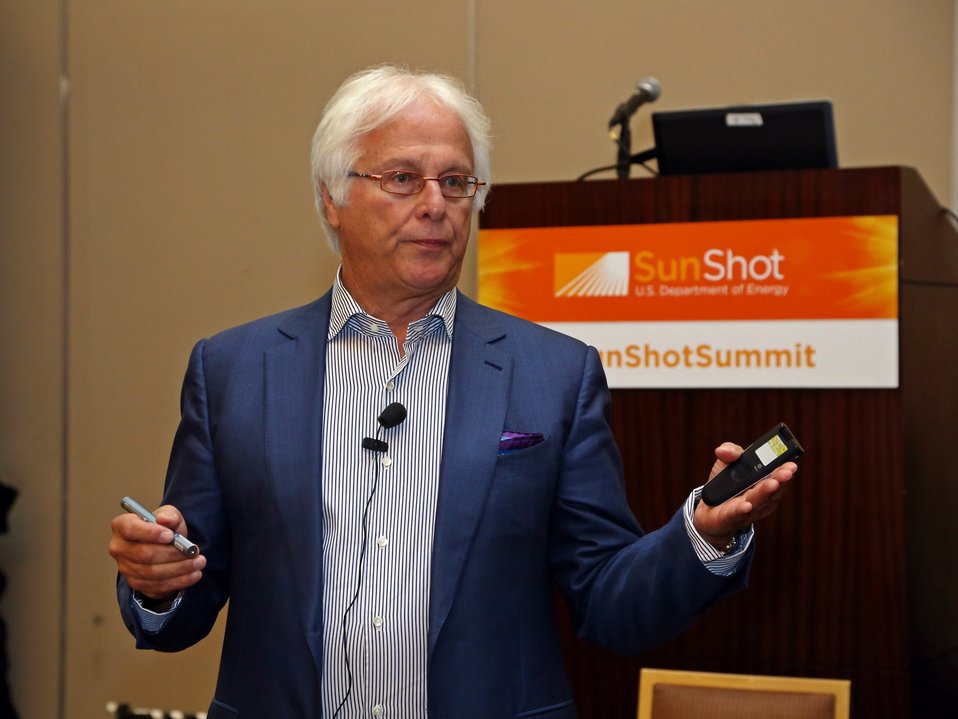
Breakout Sessions 19